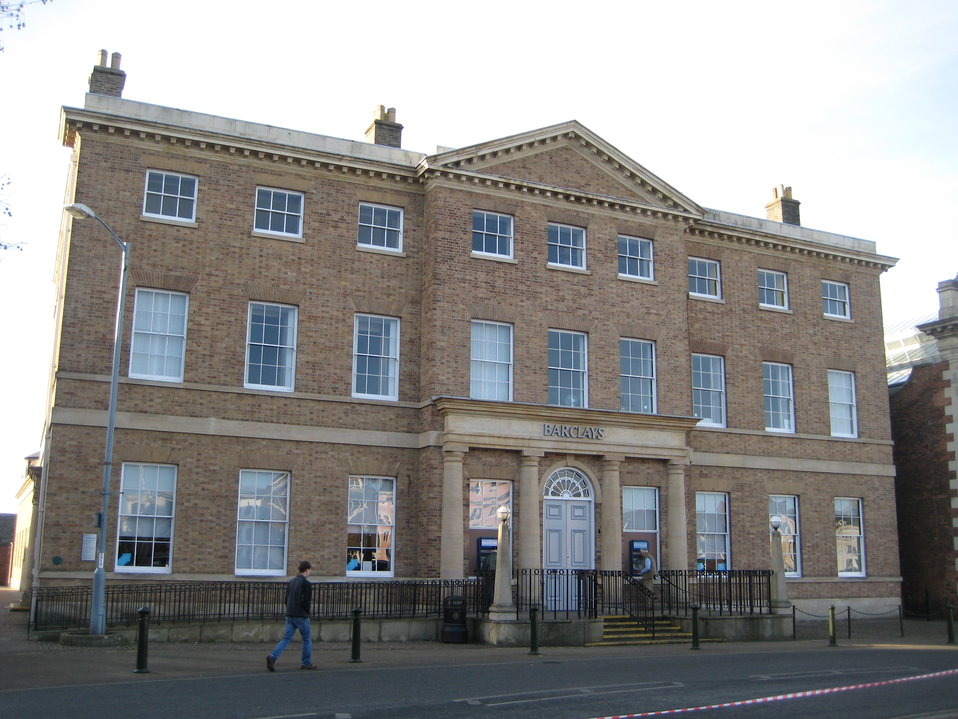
Hogge Mansion, King's Lynn